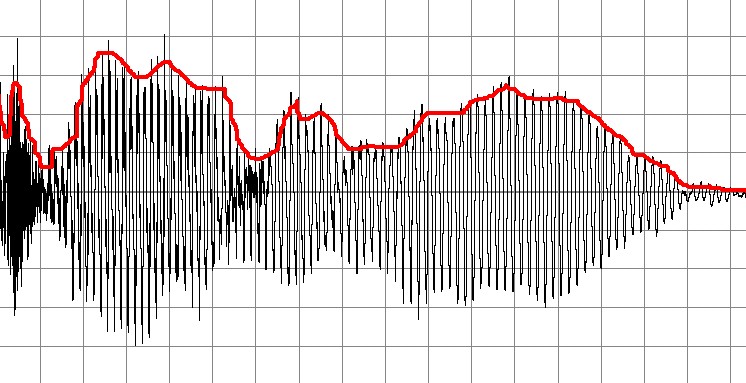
A wavefile in a waveeditor, its envelope marked with a thick red line.